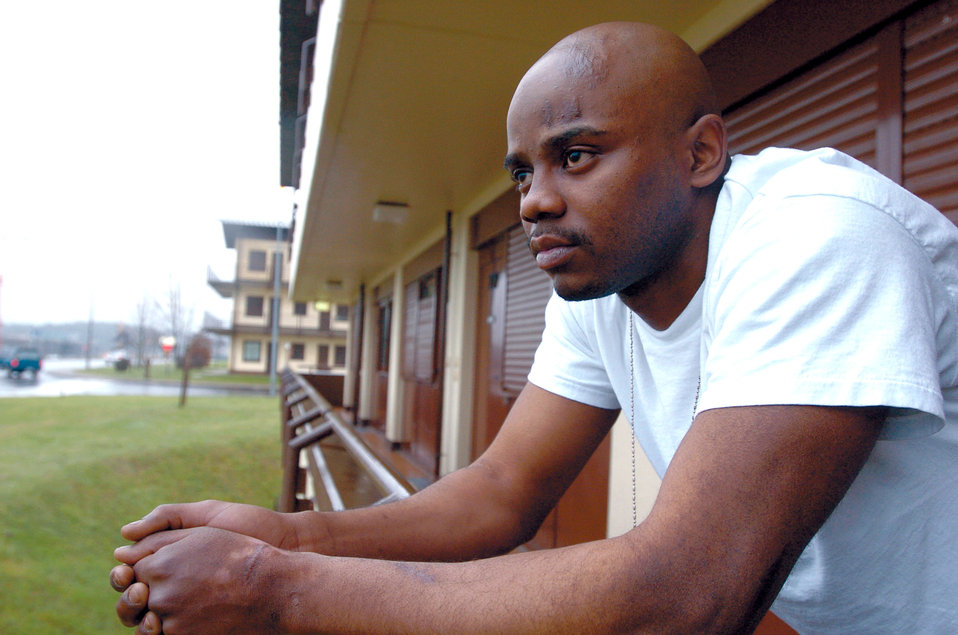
Airman recalls fatal crash

Airman 1st Class Skyler Burts rests on a banister at his dormitory at Spangdahlem, Air Base , Germany. He still bears the scars from the single-vehicle accident and the hand and arm surgery that followed. Airman Burts is a firefighter with the 52nd Civil Engineer Squadron.